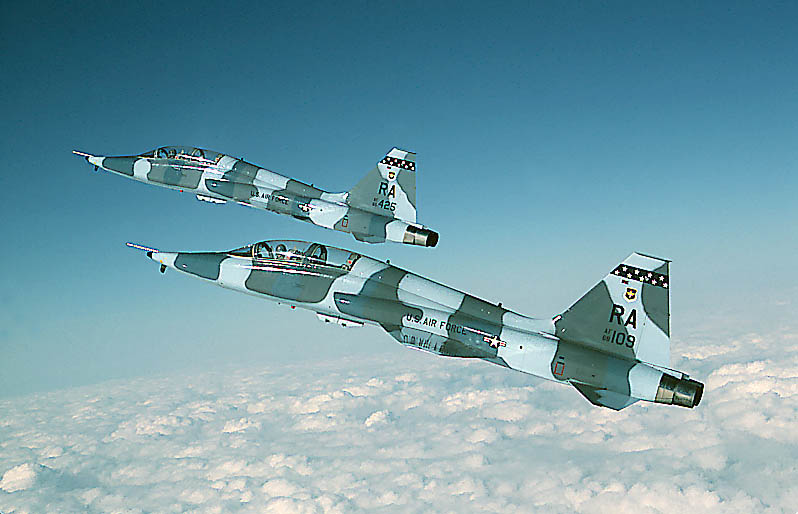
Twin Talons

1990's -- Air Education and Training Command flys the modified version of the T-38, the AT-38B, to prepare pilots for fighter aircraft such as the F-15, F-16 and A-10. This model carries external armament and weapons delivery equipment for training.